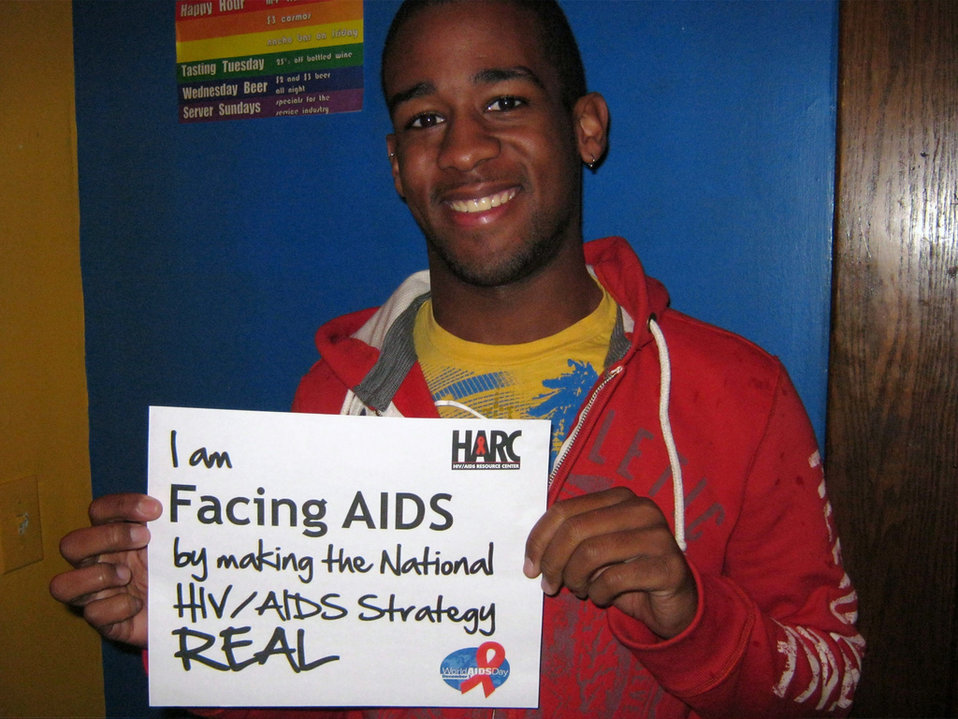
We are Facing AIDS through NHAS-10